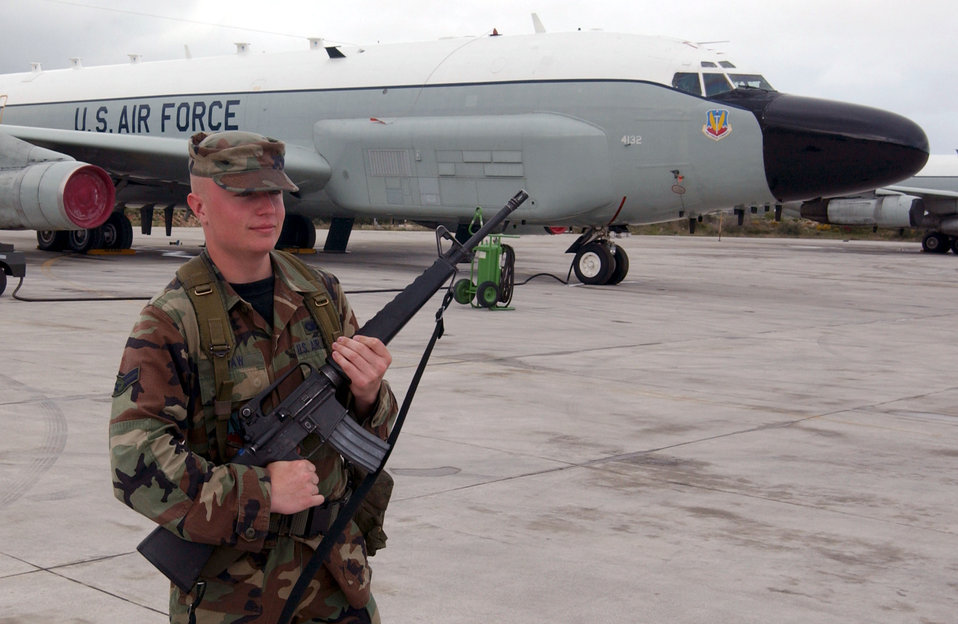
Guarding RJ

OPERATION IRAQI FREEDOM -- Airman 1st Class David Shaw, assigned to the 398th Air Expeditionary Group, guards an RC-135 Rivet Joint at an entry control point on the flight line at a forward deployed operating base located in the Mediterranean region in support of Operation Iraqi Freedom.